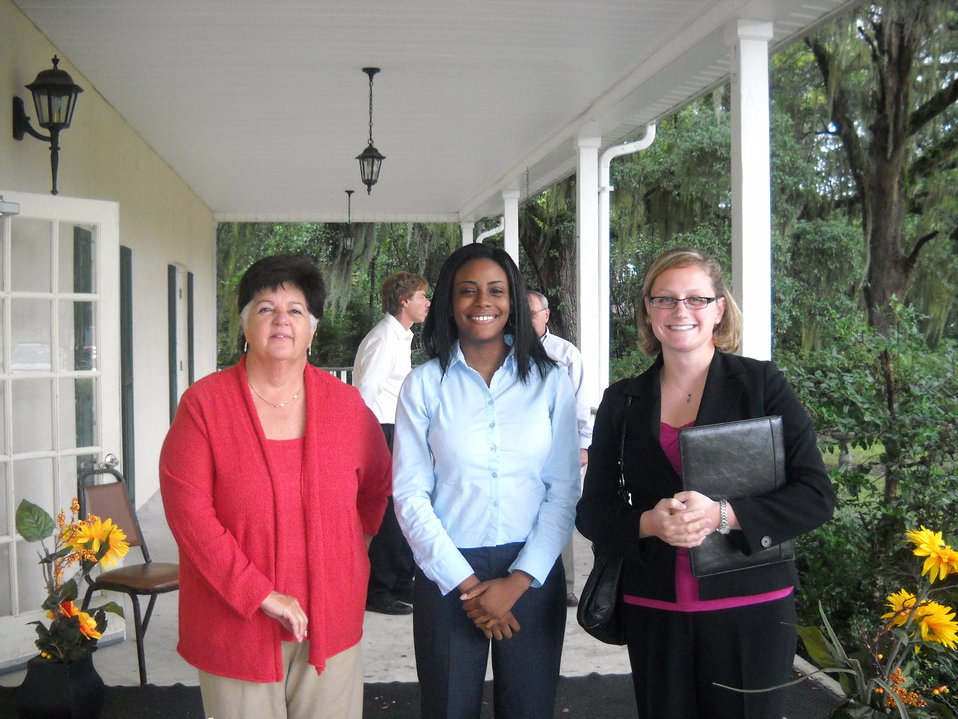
Field Hearing on Broadband Adoption 10-6-09